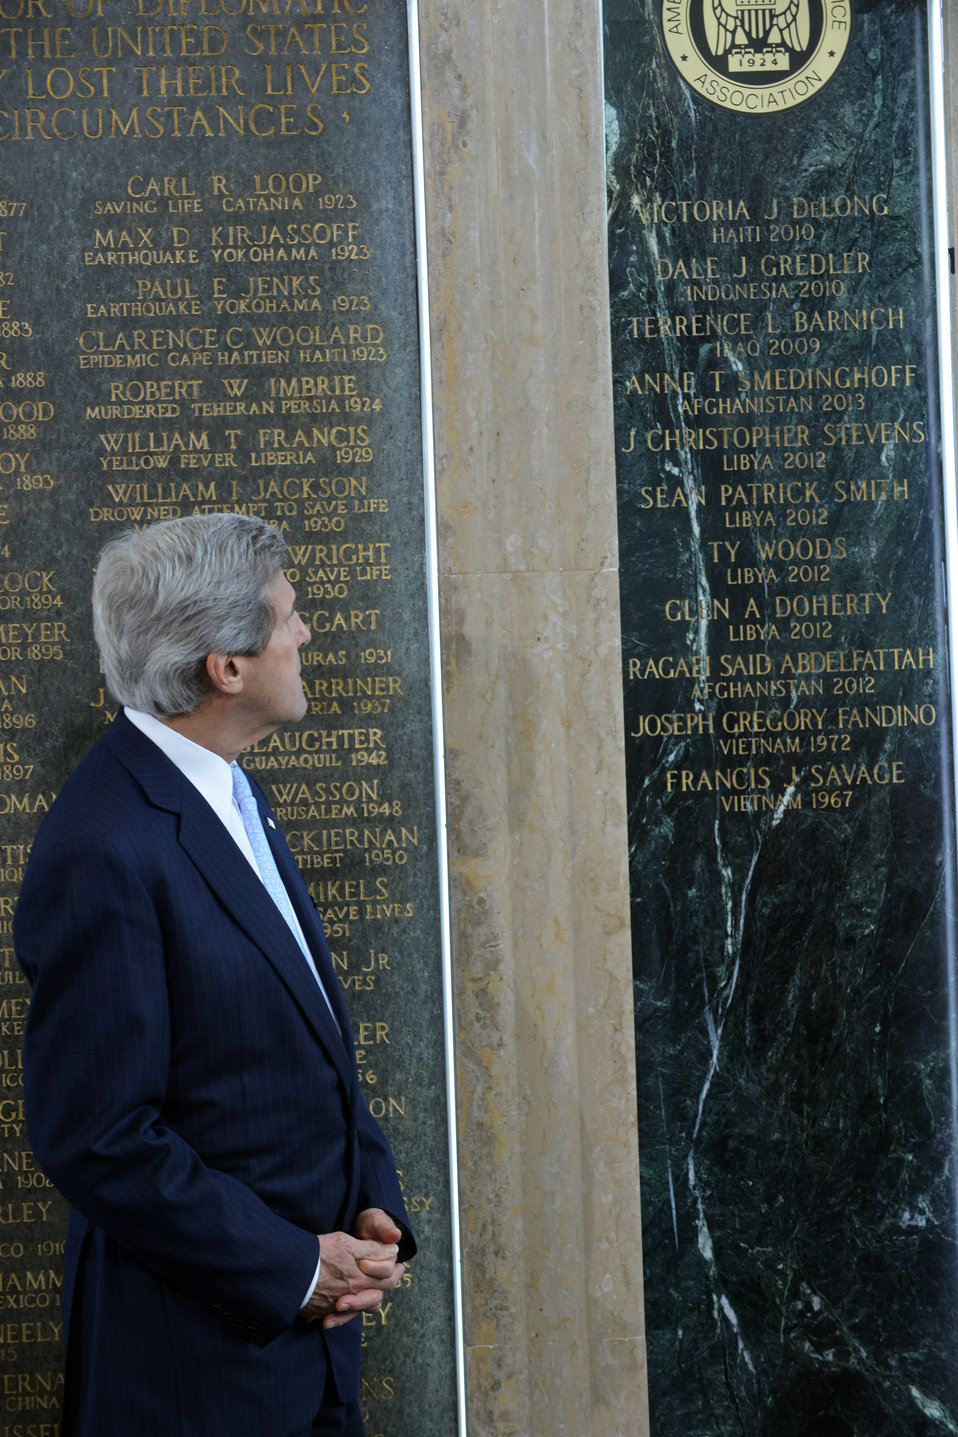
Secretary Kerry Honors Fallen Foreign Affairs Colleagues

U.S. Secretary of State John Kerry honors foreign affairs colleagues, who have lost their lives while serving overseas in the line of duty or under heroic or other inspirational circumstances, at the American Foreign Service Association (AFSA) Memorial Plaque Ceremony at the U.S. Department of State in Washington, D.C., on May 3, 2013.